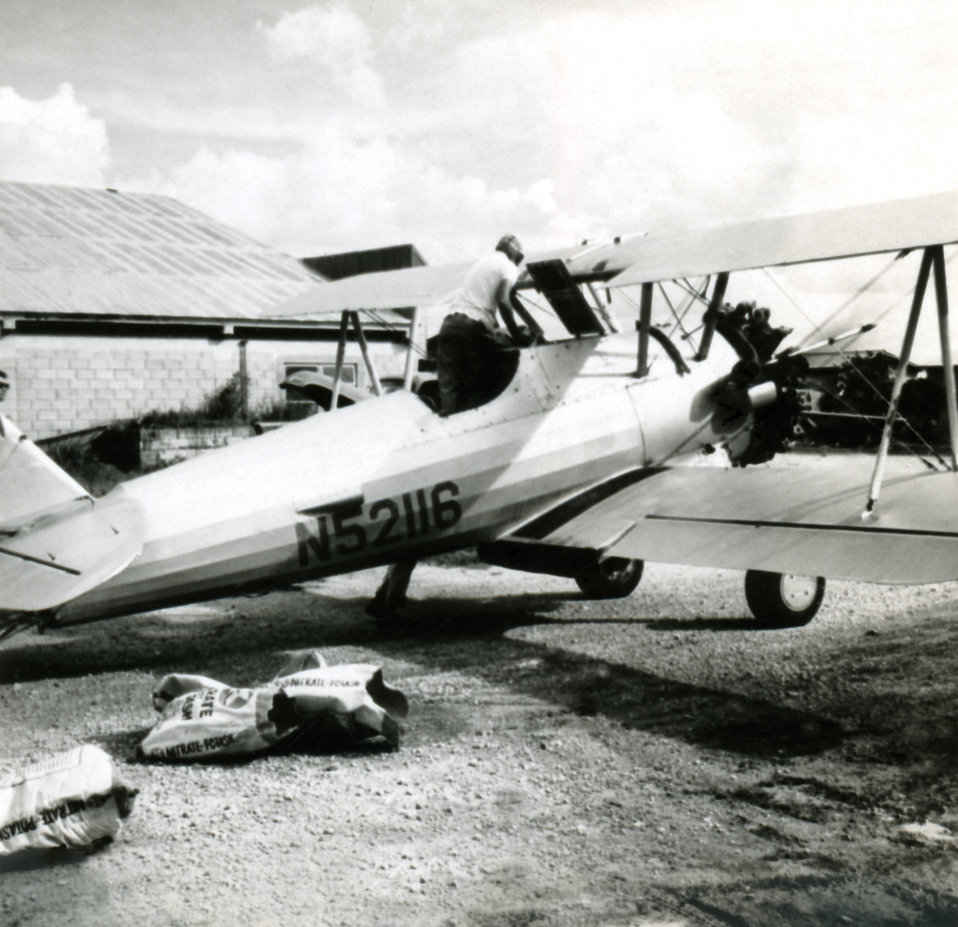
This 1950s historical photograph was provided by the Center for Disease Control's (CDC), National Institute for Occupational Safety and Health (NIOSH), showed the spray pilot of a crop-dusting biplane who was loading pesticide bags into the plane's spraying mechanism. Occupational hazards noted at the time were chemical exposure, and the 'flying habits associated with pesticide application". Activities such as this need stringent oversight by a regulating body such as NIOSH, which would make the health and welfare of such workers a paramount concern.